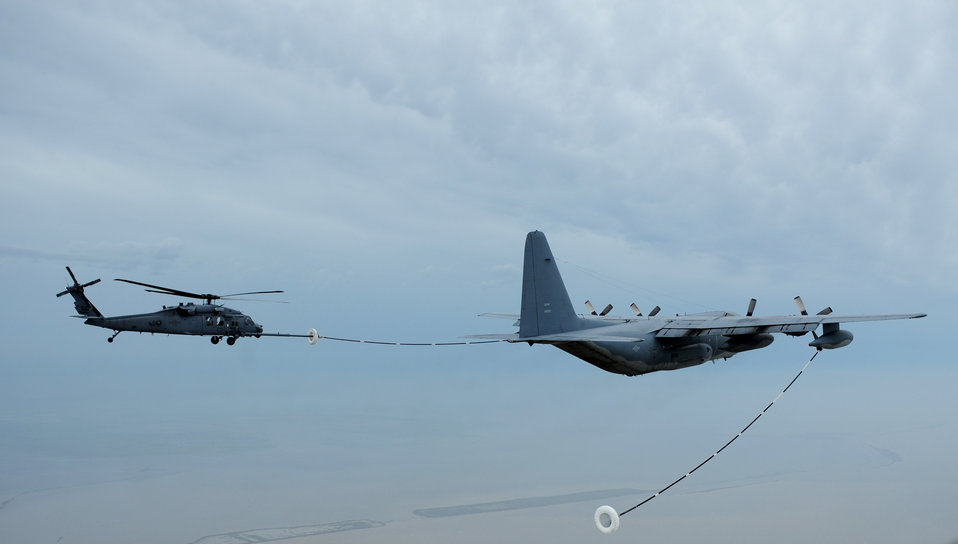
Airmen conduct search, rescue

An HH-60 Pave Hawk receives fuel from a HC-130 Hercules during search and rescue operations in Galveston, Texas, after Hurricane Ike, Sept. 13. Both aircraft are assigned to the 331st Air Expeditionary Group at Randolph Air Force Base, Texas.